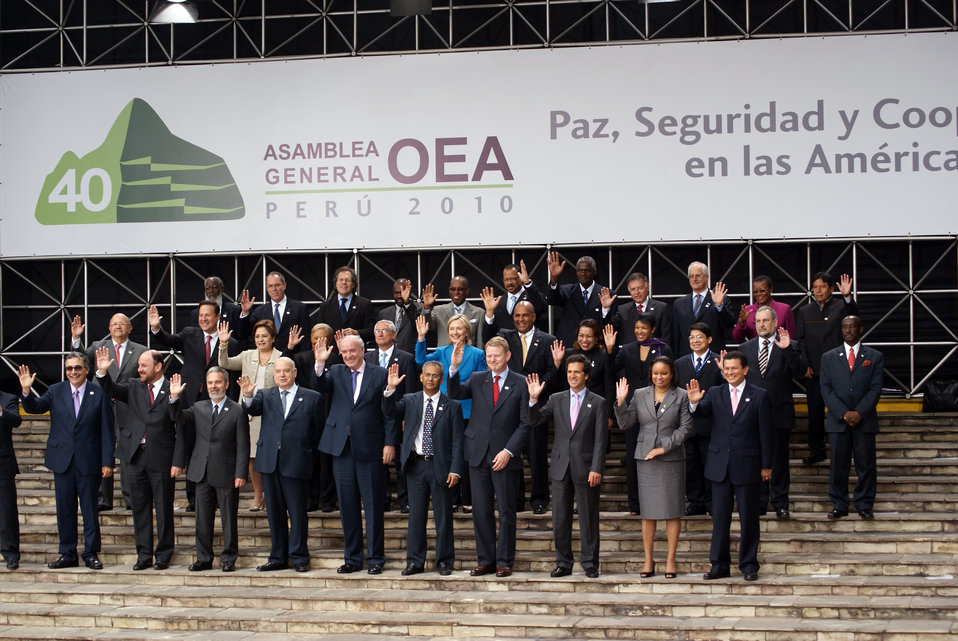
Secretary Clinton Attends 40th OAS Assembly Official Ministerial

U.S. Secretary of State Hillary Rodham Clinton poses with leaders during the 40th OAS Assembly Official Ministerial Photo in Lima, Peru June 7, 2010.